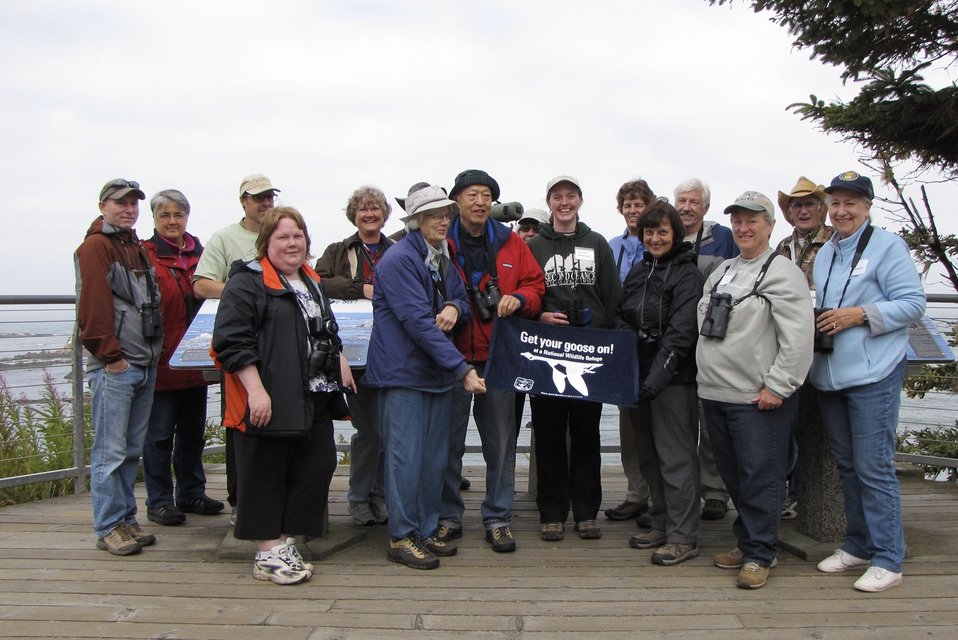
Get Your Goose On! - Oregon Shorebird Festival

GYGO at the Oregon Shorebird Festival!